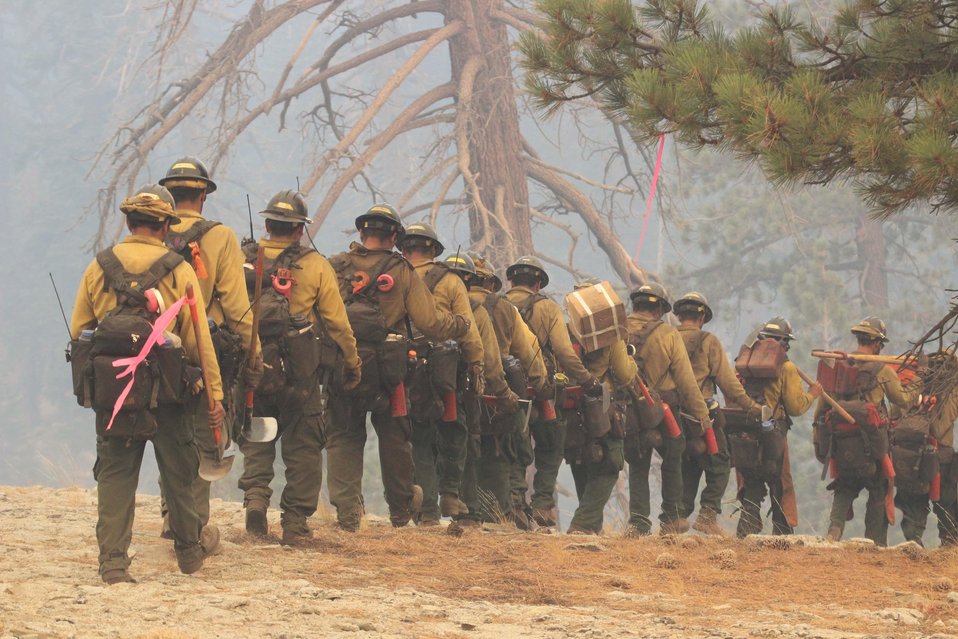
Geronimo Interagency Hotshot Crew (IHC) hikes to the fireline at the Rim Fire. The Rim Fire in the Stanislaus National Forest near in California began on Aug. 17, 2013 and is under investigation. The fire has consumed approximately 256,169 acres and is 84% contained.